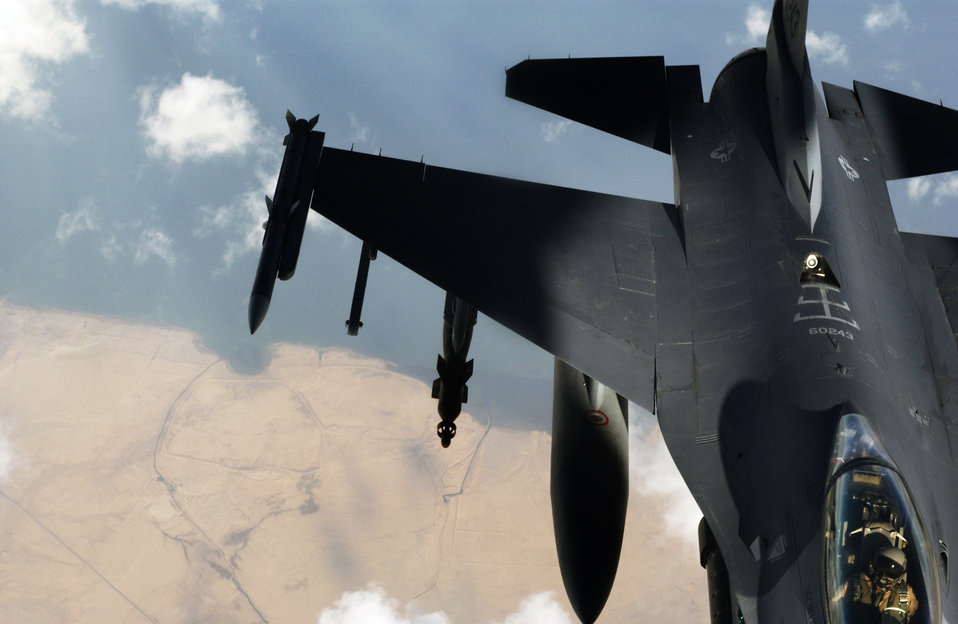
Over the Tigris

BAGHDAD, Iraq -- An F-16 Fighting Falcon prepares for an aerial refueling over the Tigris River near here Oct. 14. The F-16 is from the Virginia Air National Guard's 192nd Fighter Wing.